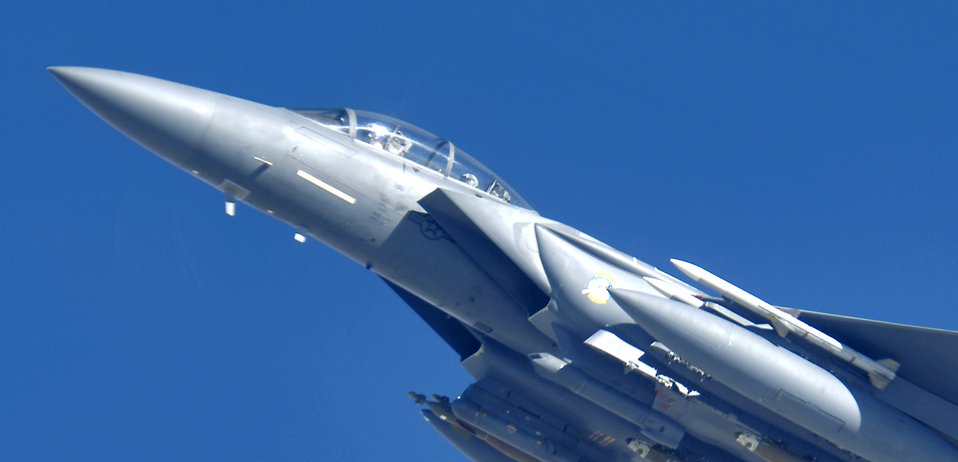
Operation Mountain Lion roars

An F-15E Strike Eagle soars over the mountains of Afghanistan in support of Operation Mountain Lion on Wednesday, April 12, 2006. The crew and fighter are deployed to the 336th Expeditionary Fighter Squadron in Southwest Asia from the 4th Fighter Wing at Seymour Johnson Air Force Base, N.C.